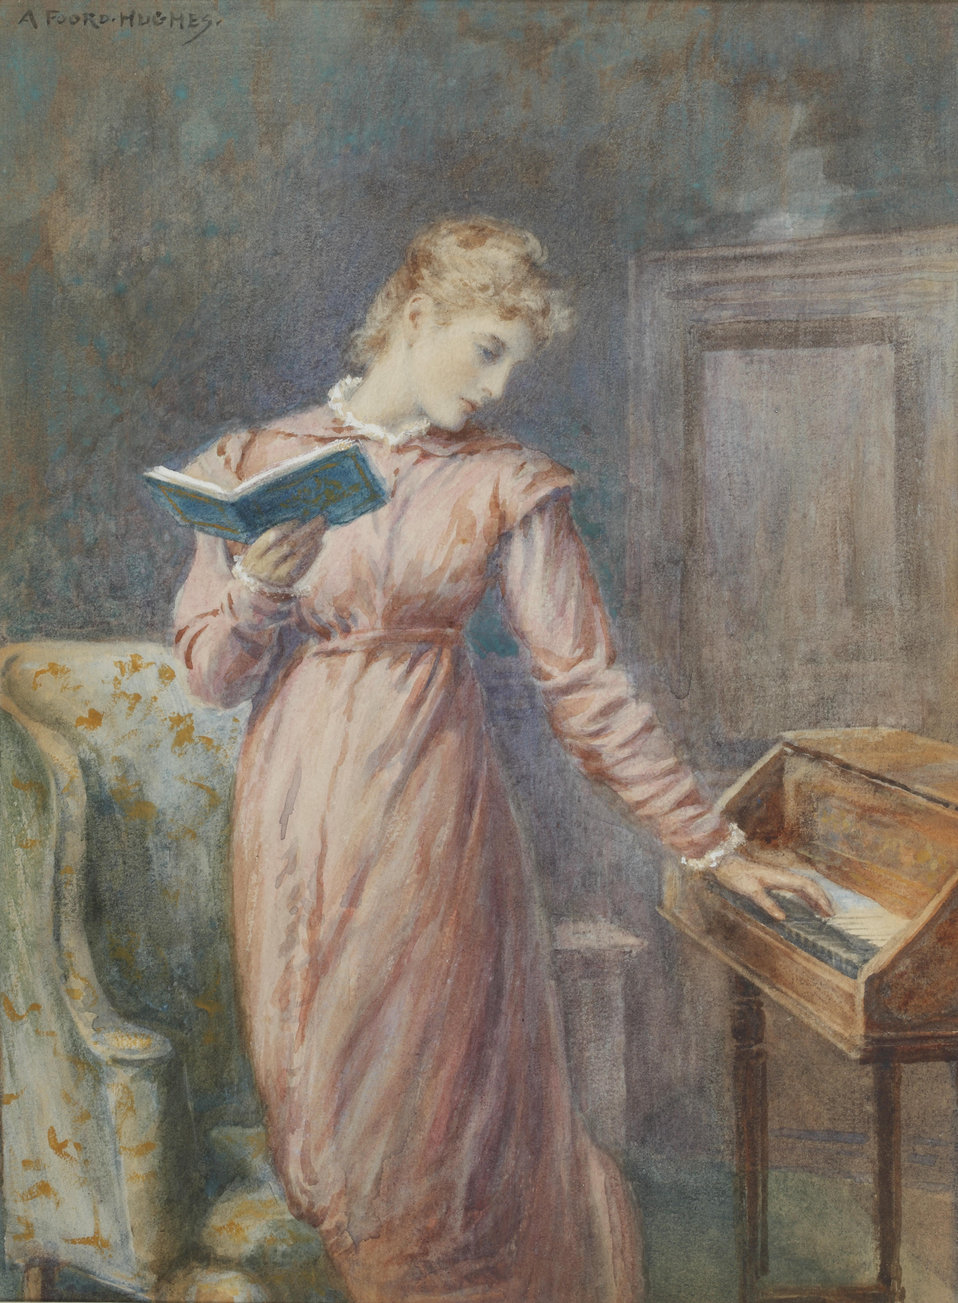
A lady reading while playing the spinet; signed 'A Foord-Hughes' (upper left); watercolour heightened with bodycolour; 32 x 23.5 cm